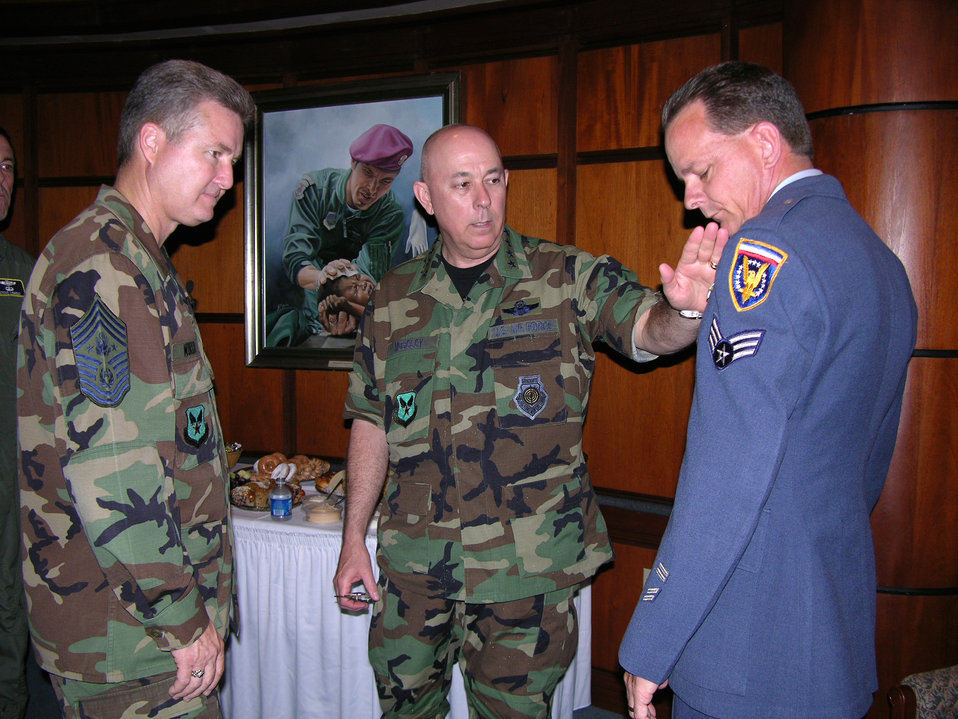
Chief of staff visits command chiefs conference

Gen. T. Michael Moseley, Air Force chief of staff, discusses changes to the uniform with Chief Master Sgt. of the Air Force Gerald R. Murray during the 2006 Worldwide Command Chiefs Conference at the Air Force Senior NCO Academy, Gunter Annex, Ala., on Wednesday, April 26, 2006. Some of the changes applied to the new uniforms will come from the look of the first Air Force uniform, worn here by Chief Master Sgt. Malcolm McVicar, Enlisted Heritage Hall director.